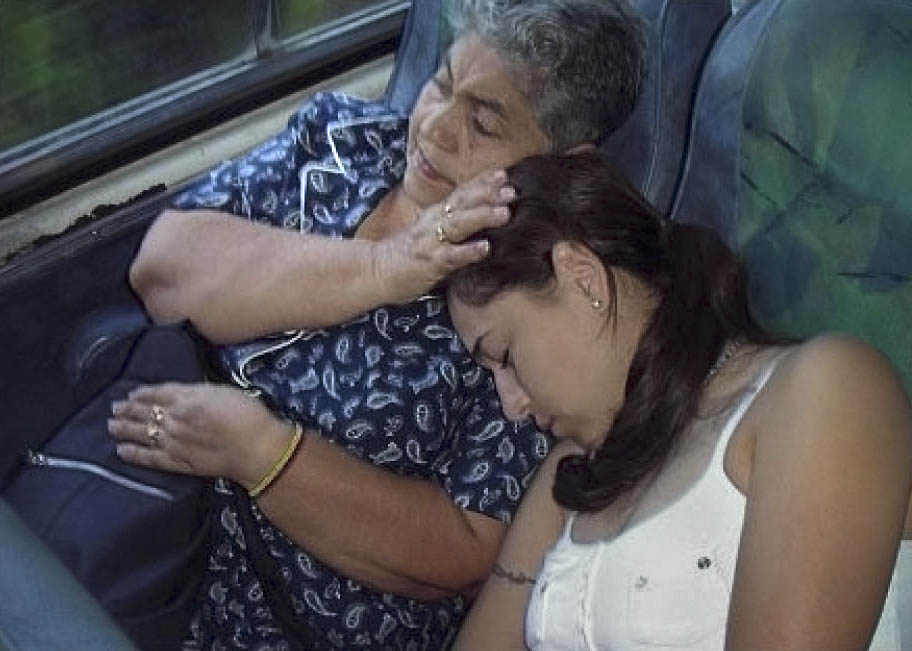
Family ties

BELEN DE UMBRIA, Colombia (AFPN) -- Staff Sgt. Yaneth Alvarez shares a somber moment with her grandmother, Carmen Tulia, on a visit home. Sergeant Alverez says her grandmother, a seamstress, and her grandfather, Gonzalo Alvarez, a truck driver, worked long hours to provide for her and her family.